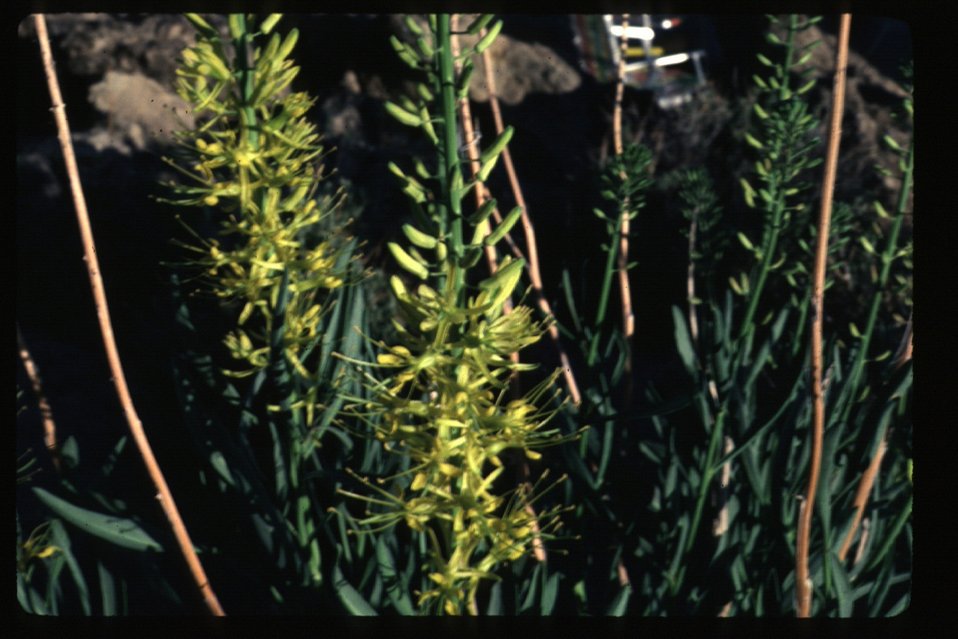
Princess plum Stanleya pinnata Brush, grasses Wildflowers